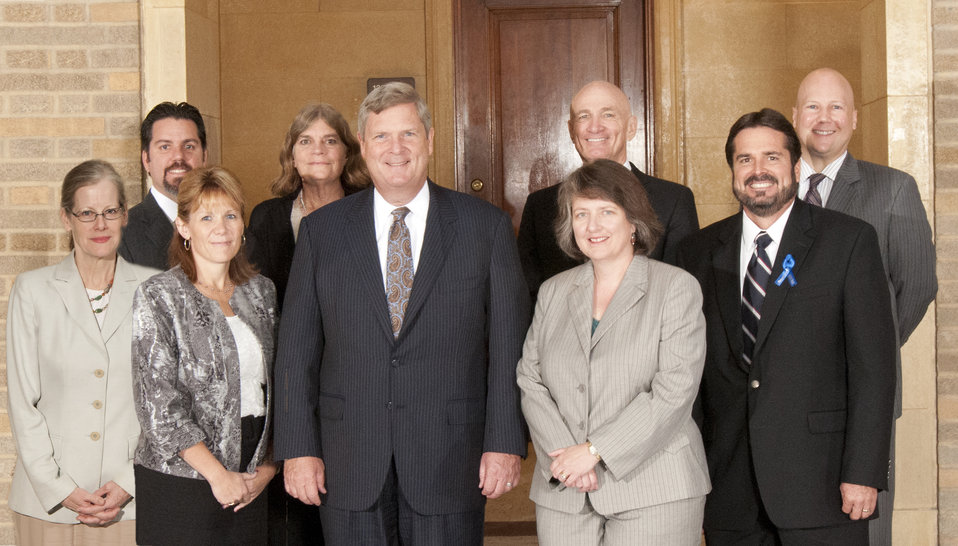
Agriculture Secretary Tom Vilsack and Deputy Agriculture Secretary Kathleen Merrigan with Animal Relocation Task Force Group Animal and Plant Health Inspection Service (APHIS) on the patio of the U.S. Department of Agriculture in Washington, D.C. on Wednesday, Sept. 12, 2012. The Animal Relocation Task Force supported efforts that empowered a successful resolution to the care and placement of over 300 animals from the Wild Animal Orphanage.